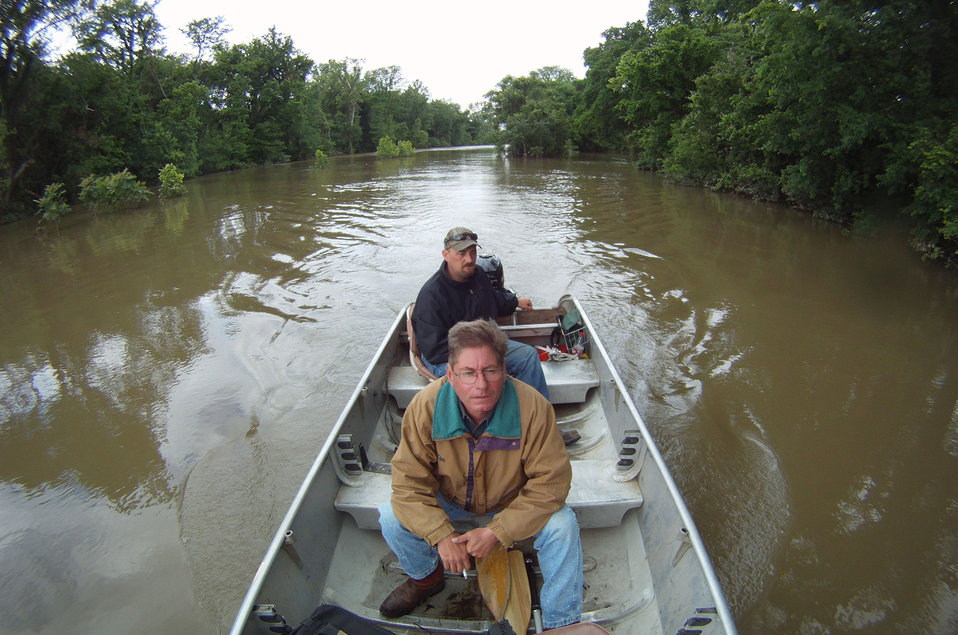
Flood waters from the Mississippi River flooded Joe Higdon's ranch on President's Island with 6-12 feet of water. On Sunday, May 5, 2011, on President’s Island near Memphis, TN.